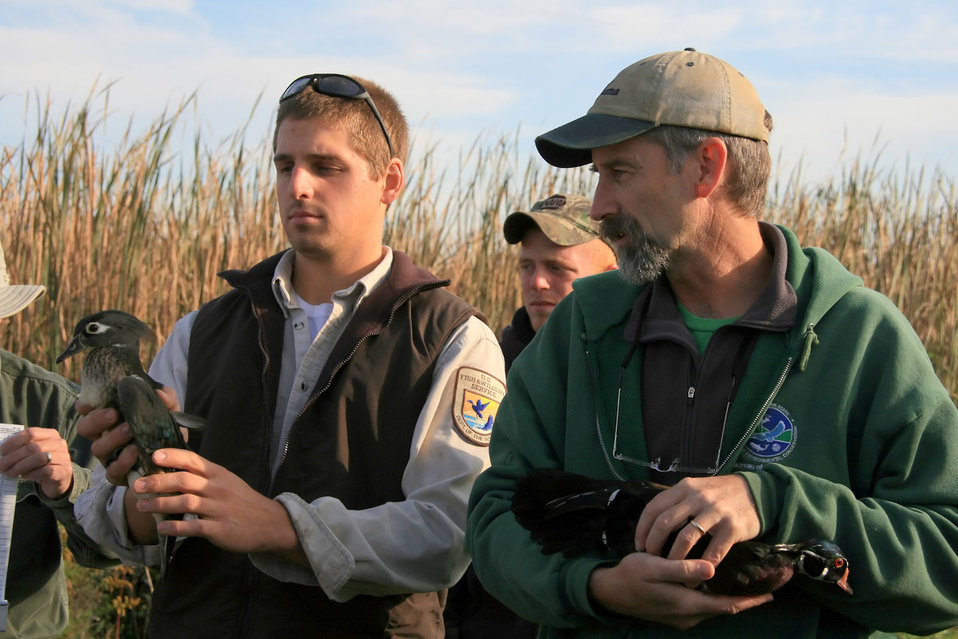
Banding Wood Duck

Photographed at Montezuma National Wildlife Refuge.